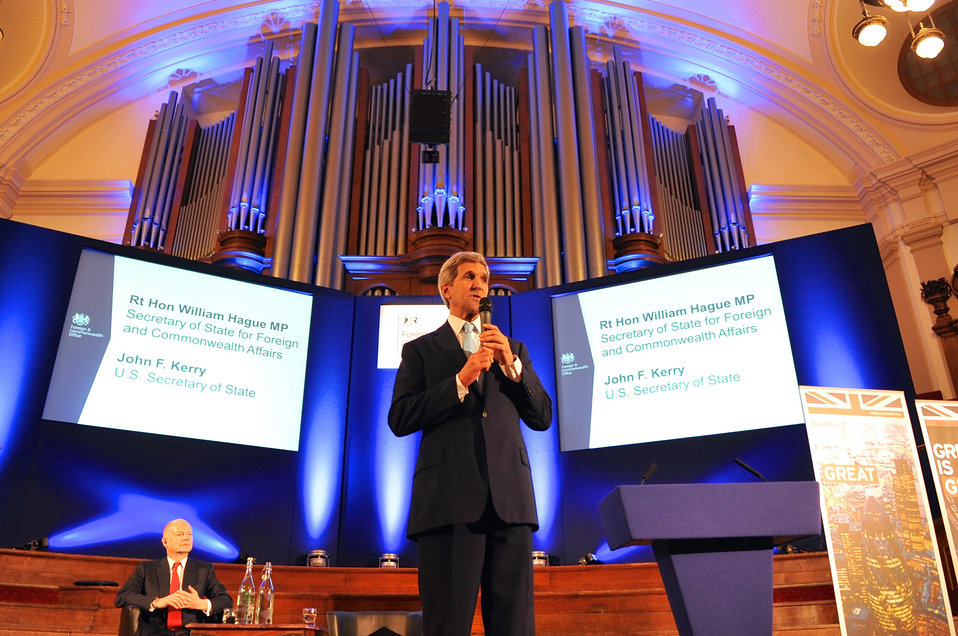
Secretary Kerry Addresses British Chiefs of Mission Conference

As British Foreign Secretary William Hague looks on, U.S. Secretary of State John Kerry addresses the Chiefs of Mission for UK diplomatic facilities worldwide as they attend a conference in London on May 15, 2014.